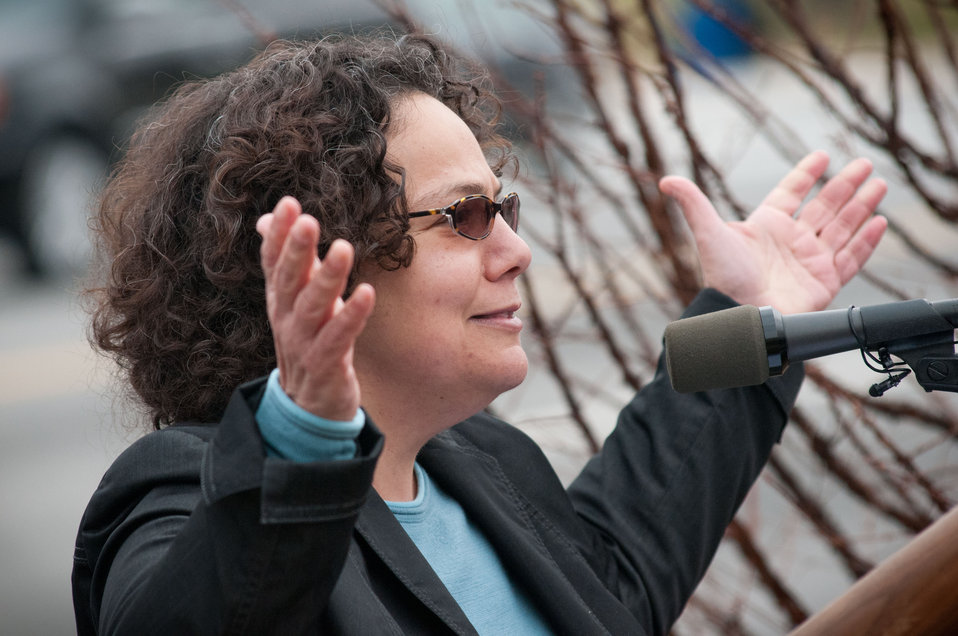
White House Council on Environmental Quality Chair Nancy Sutley, talked about how trees such as the freshly planted Dawn Redwood are given to future generations to enjoy, and used today to celebrate Tu B’Shevat “The New Year of the Trees” on the District of Columbia western lawn next to the USDA Headquarters, Whitten Building at 14th Street and Independence Ave SW, in Washington, D.C. on Wednesday, February 8, 2012.